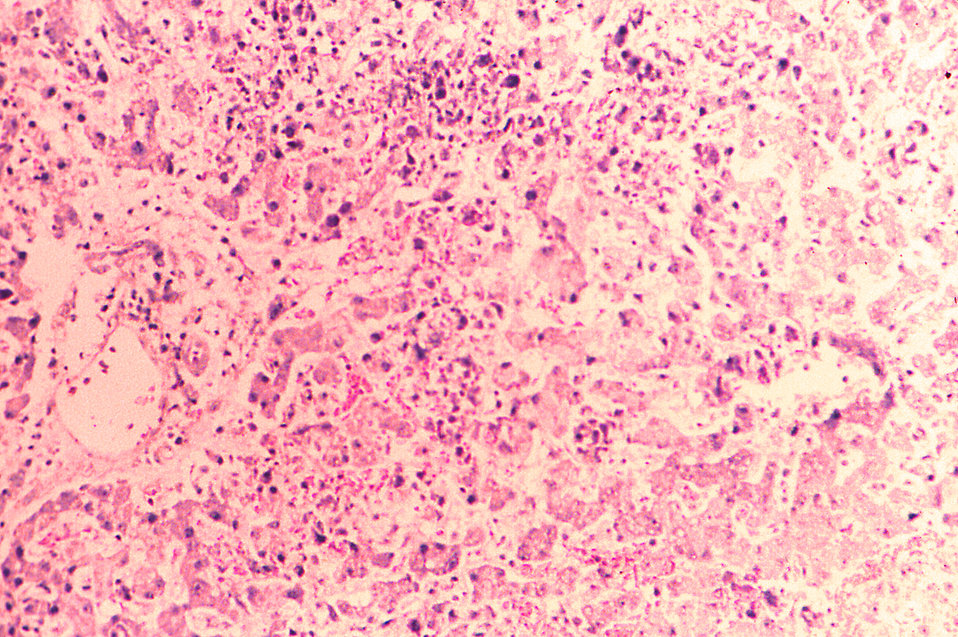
Under a magnification of 250X, this hematoxylin-eosin-stained (H&E) photomicrograph depicts the cytoarchitectural changes found in a liver tissue specimen extracted from a Lassa fever patient. In this particular view you'll note 'areas of acidophilic necrosis with accompanying dilation of the sinusoids.'.